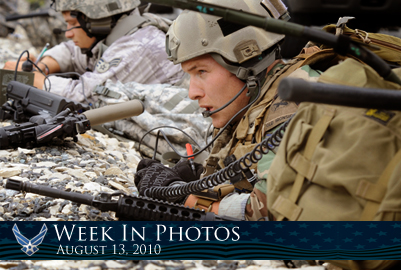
Air Force Week in Photos for Aug. 13, 2010, highlights photos from around the Air Force. In this photo by Senior Airman Caleb Pierce, Senior Airman Rich Garrett (foreground) radios for air cover during a close-air support training mission Aug. 5, 2010, during exercise Allied Strike 10 at Grafenwoehr, Germany.